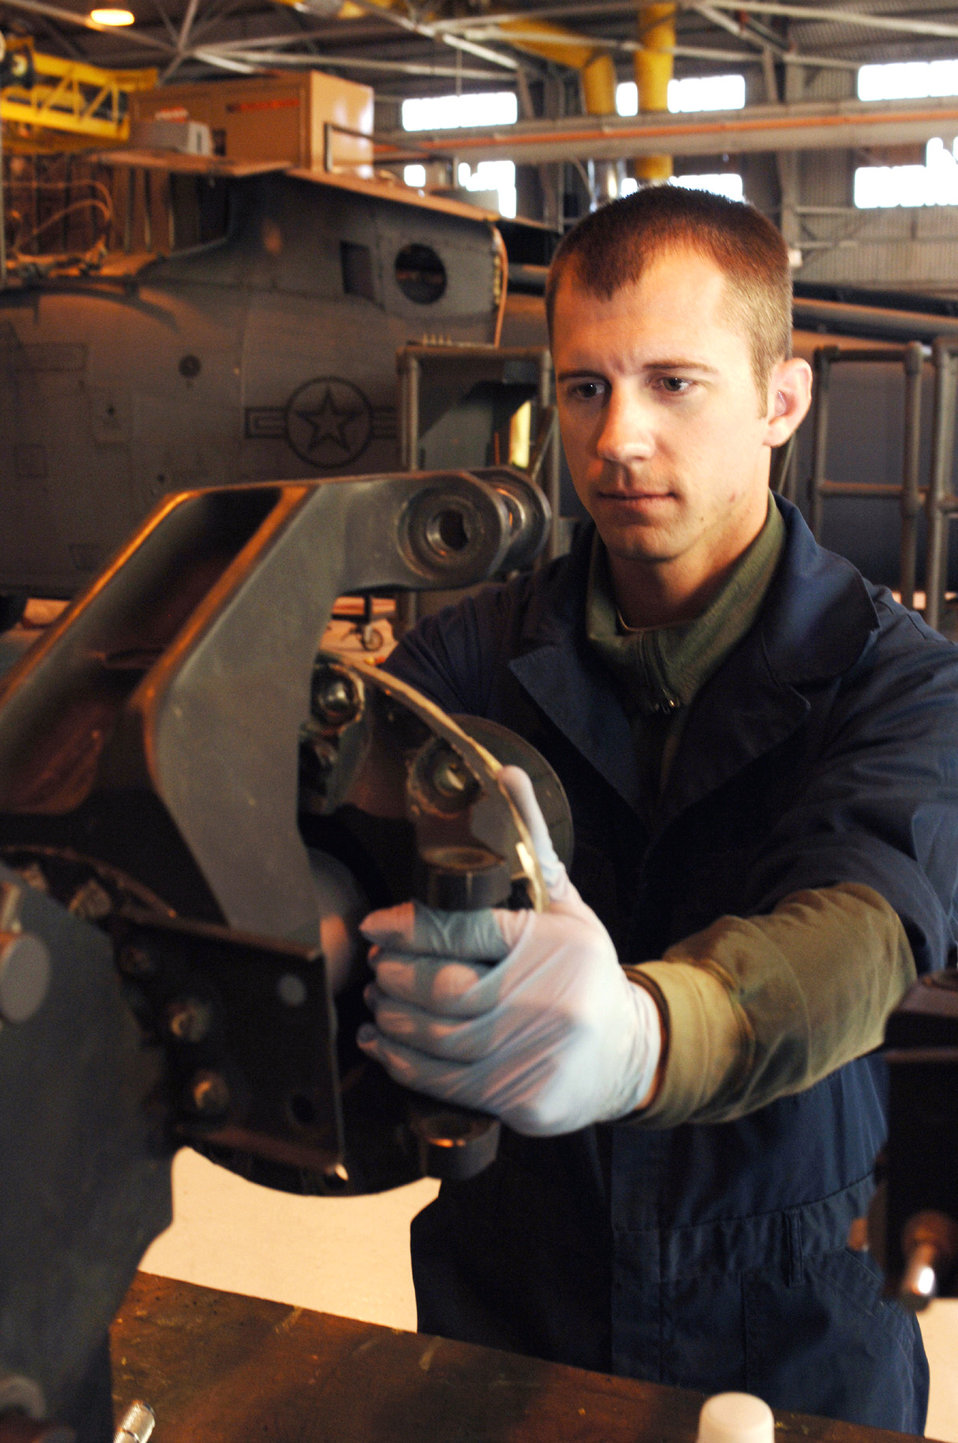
Leaning forward

MOODY AIR FORCE BASE, Ga. -- Staff Sgt. Jason Warner installs an elastomeric bearing on the main rotor spindle of a HH-60G Pave Hawk helicopter. Maintenance experts here look to reduce helicopter inspection times using the